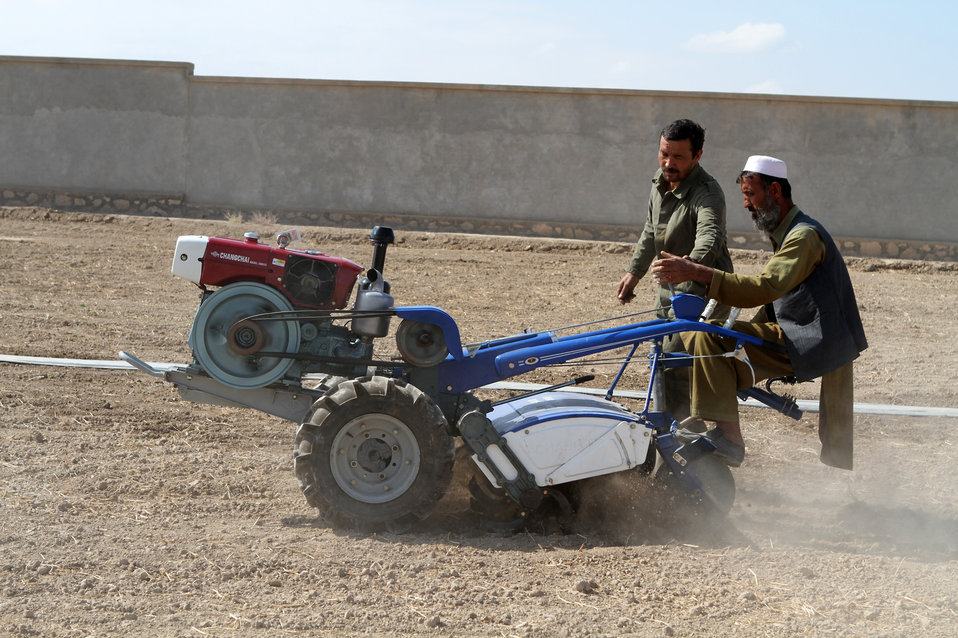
USAID funded two wheel tractor